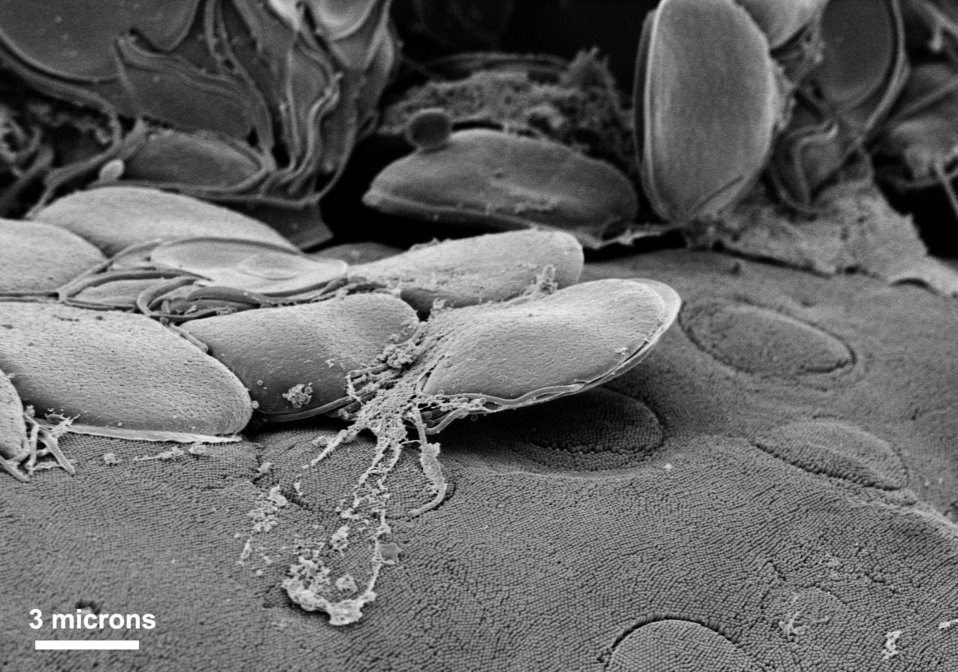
This scanning electron micrograph (SEM) depicted a group of Giardia trophozoites that were clustered on the intestinal mucosal surface. Immediately adjacent to these organisms were a number of the characteristic circulars lesions that can be left on surface as a result of the tight adhesion of the organism's ventral adhesive disk.